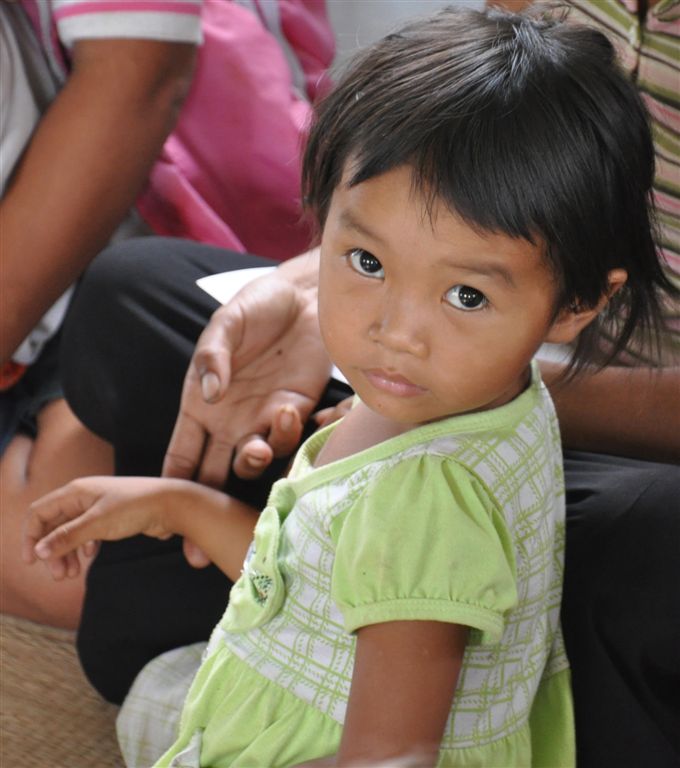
Local populations benefit from new cocoa crop techniques and market access.